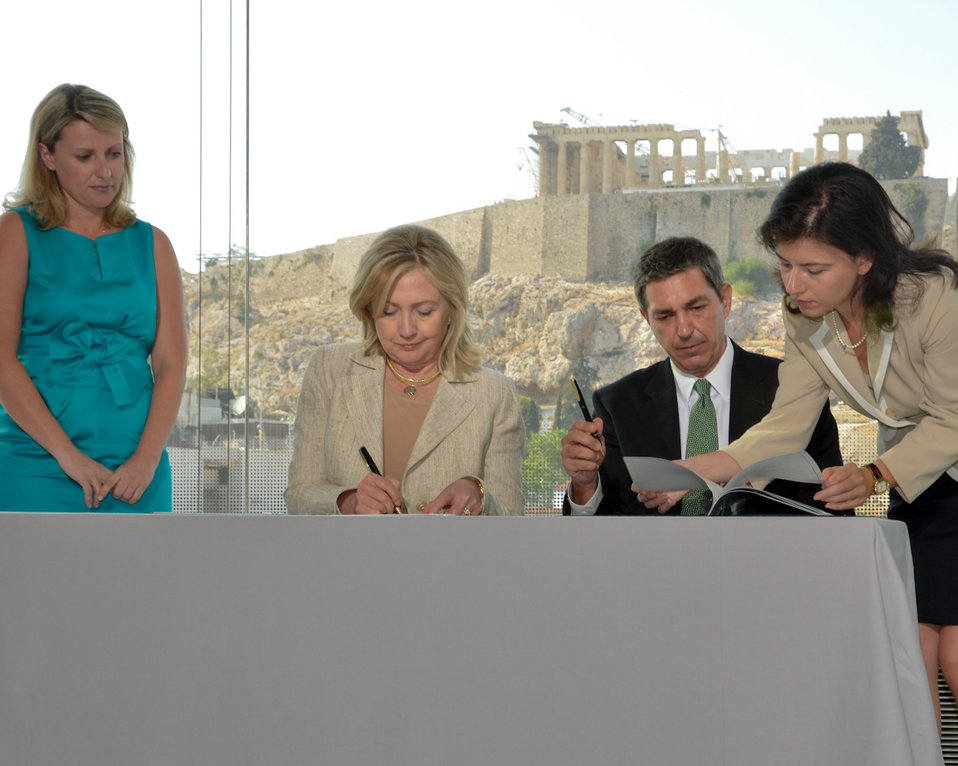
Secretary Clinton and Greek Foreign Minister Lambrinidis Sign an Agreement To Protect Greek Cultural Heritage

U.S. Secretary of State Hillary Rodham Clinton and Greek Foreign Minister Stavros Lambrinidis sign a Memorandum of Understanding between the Government of the United States of America and the Government of the Hellenic Republic to reduce the incentive for further pillage of Greece's cultural heritage at the Acropolis Museum in Athens, Greece, on July 17, 2011.